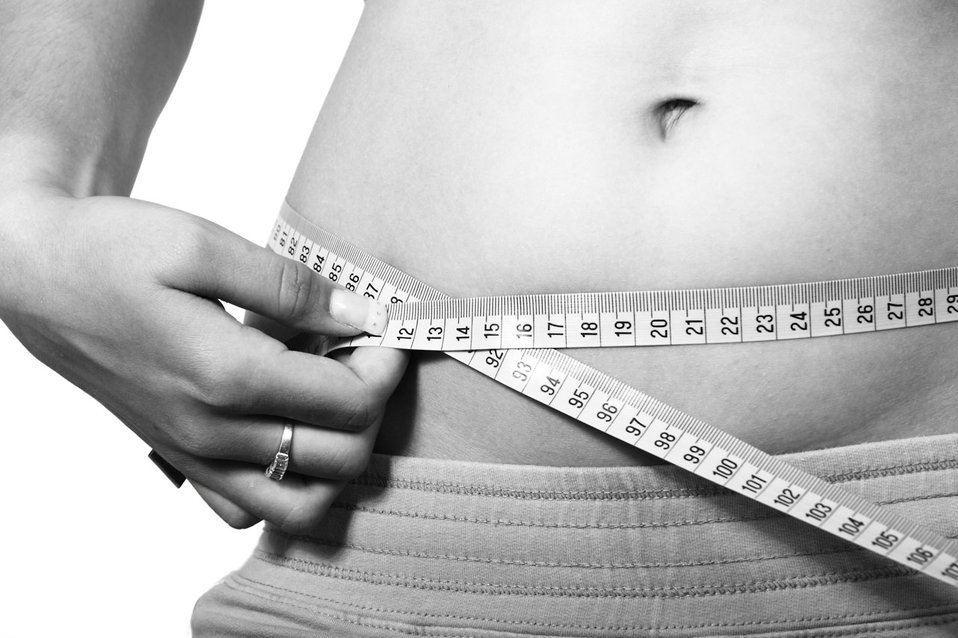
Slim belly and measure tape

Black and white image of slim belly and measure tape.